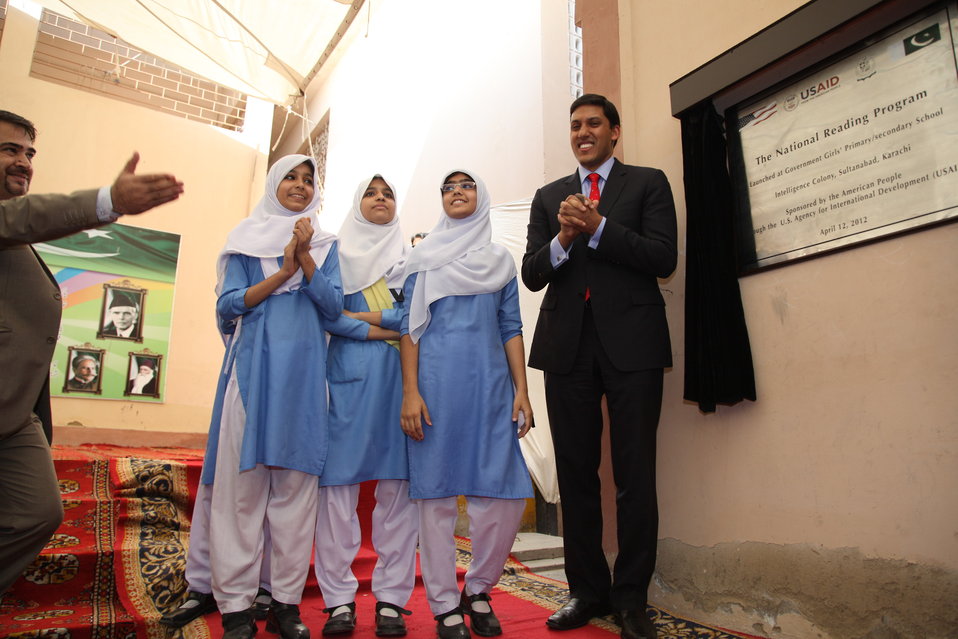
Launch of the USAID National Reading Program in Karachi on April 12, 2012.

Dr. Rajiv Shah Inaugurate the National Reading Program